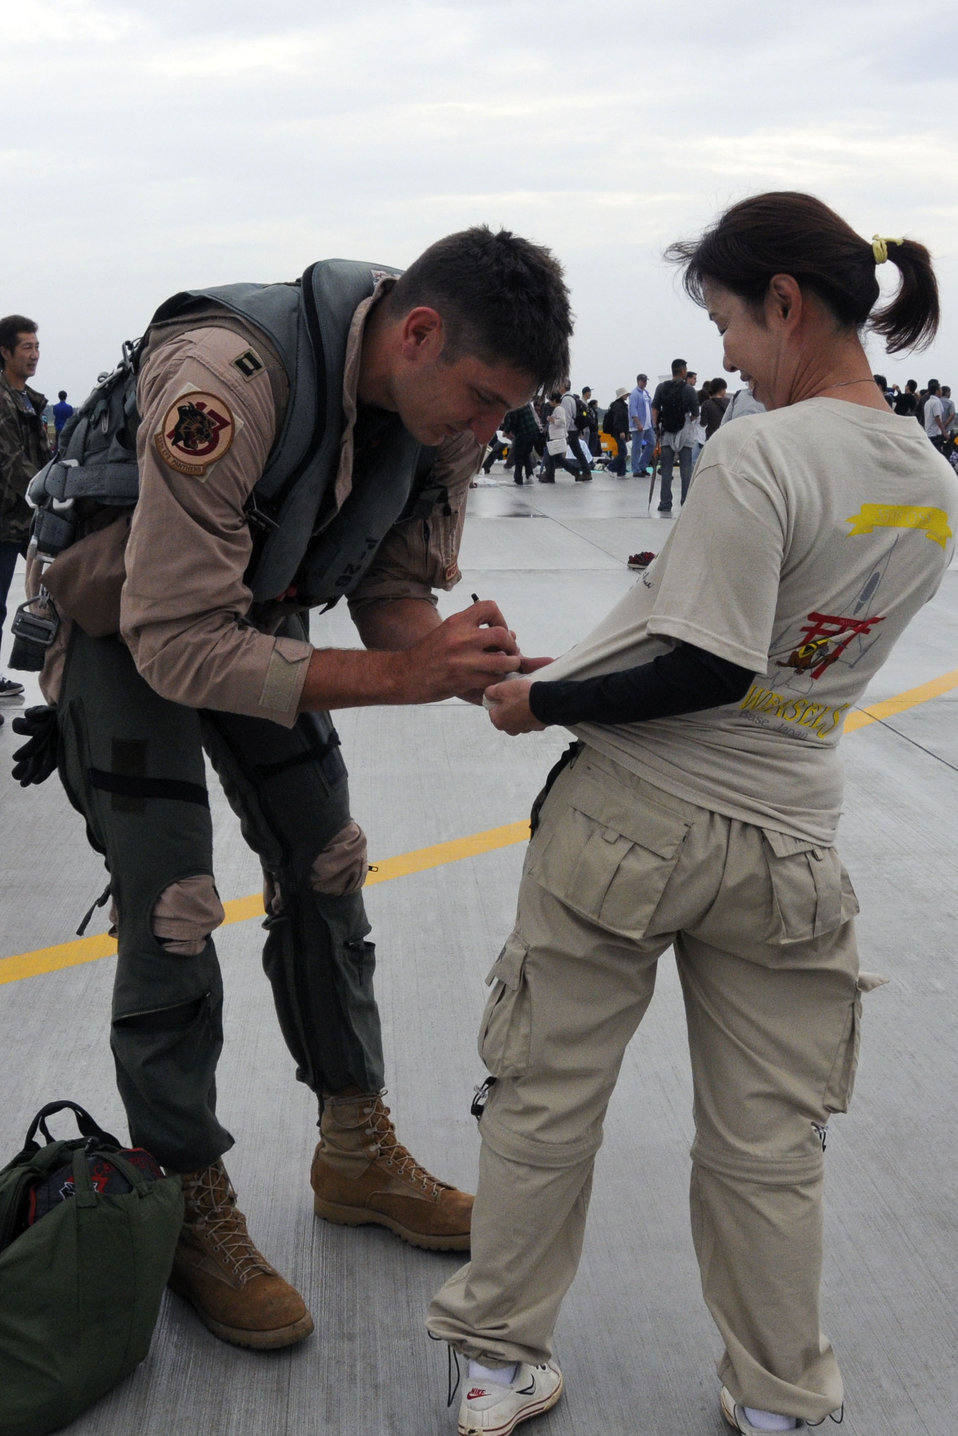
Misawa Air Festival

An F-16 Fighting Falcon pilot from the 13th Fighter Squadron autographs a fan’s T-shirt at the Misawa Air Festival Sept. 19, 2010, at Misawa Air Base, Japan.